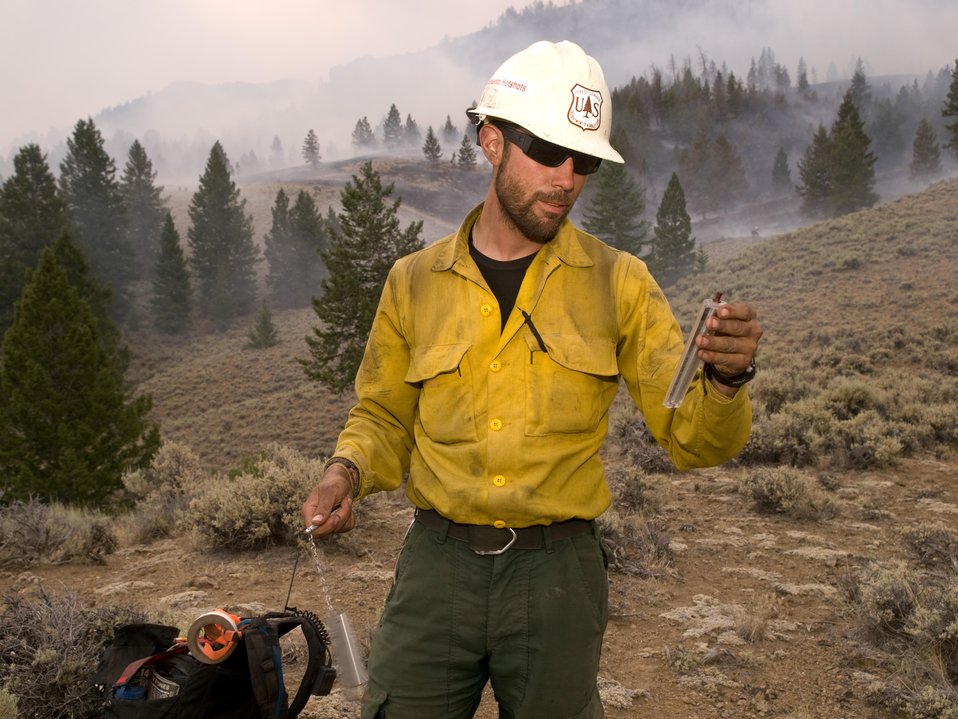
Firefighter checks on weather conditions at the Lodgepole Fire. The Lodgepole Fire in the Salmon-Challis National Forest near Challis, ID began on Jul. 20, 2013 by lightning has consumed approximately 13,700 acres and is approximately 15% contained.